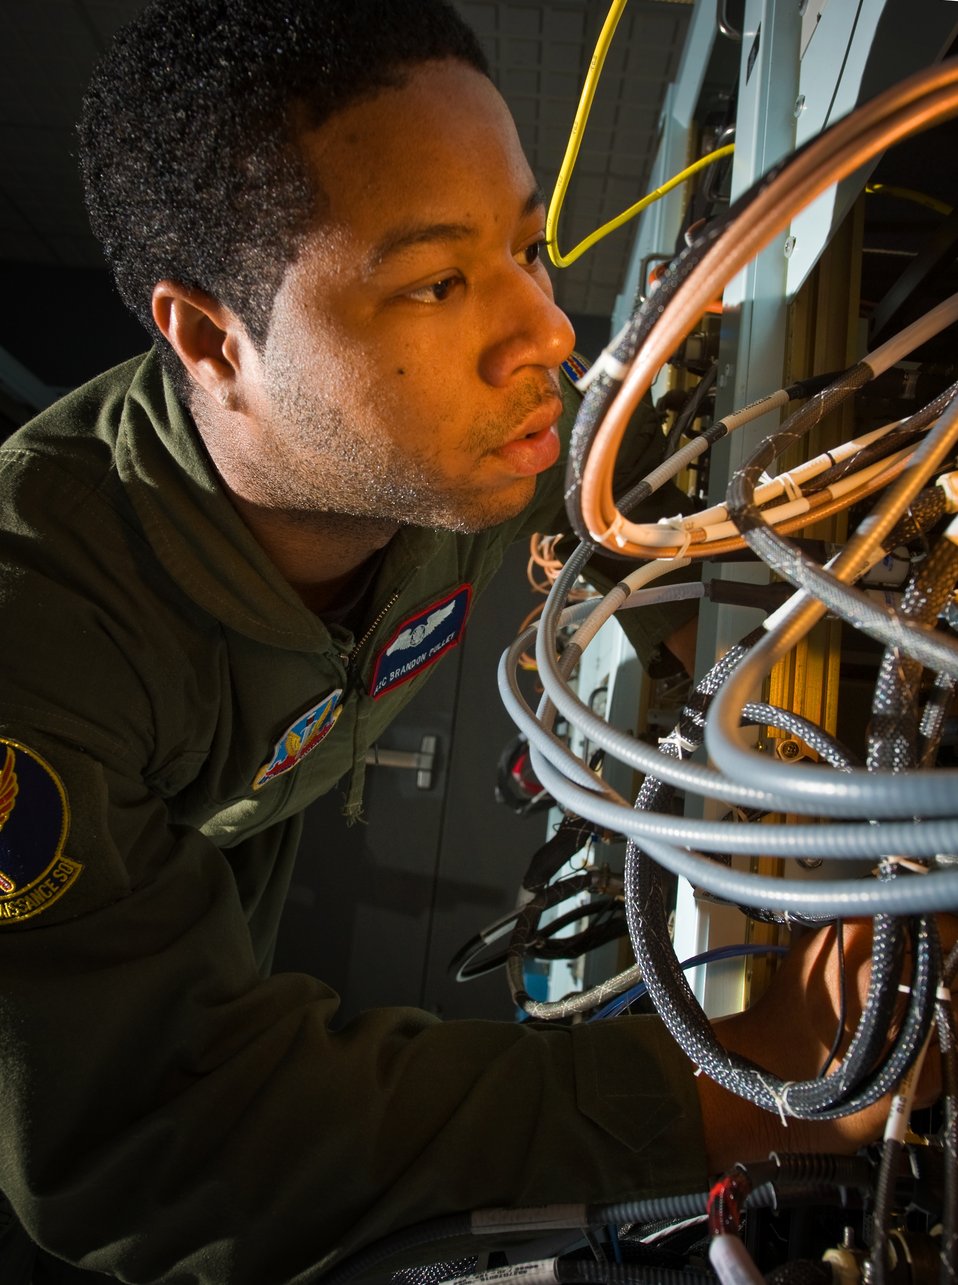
All tangled up

Airman 1st Class Brandon Pulley looks for system problems on a RC-135 Rivet Joint at Offutt Air Force Base, Neb. Airman Pulley is an airborne systems engineer with the 38th Reconnaissance Squadron based at Offutt.